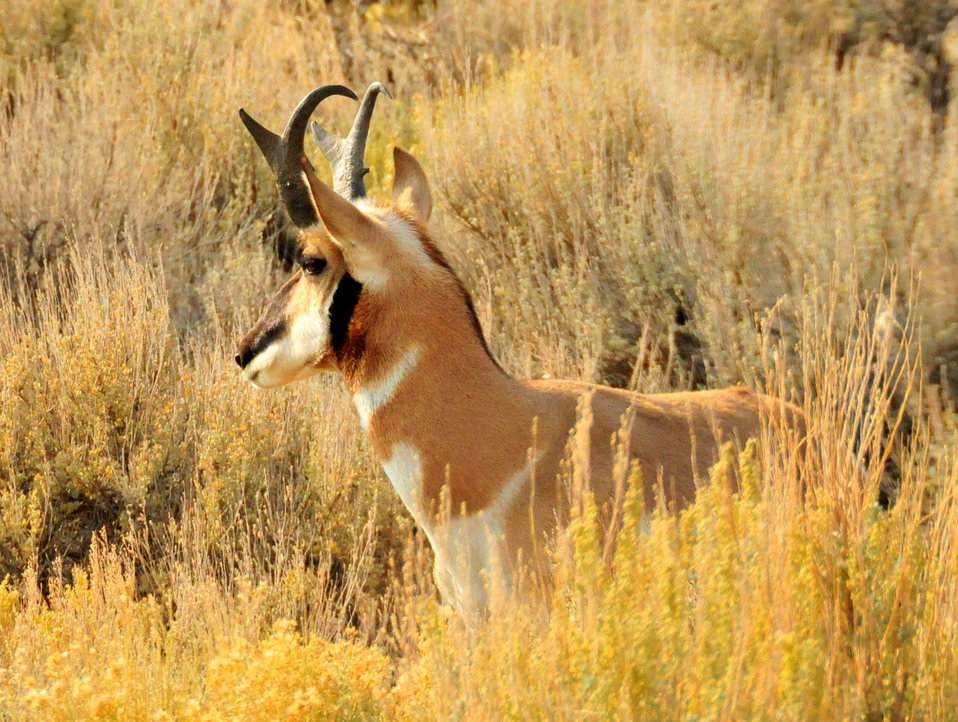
Pronghorn Buck Seedskadee NWR 3